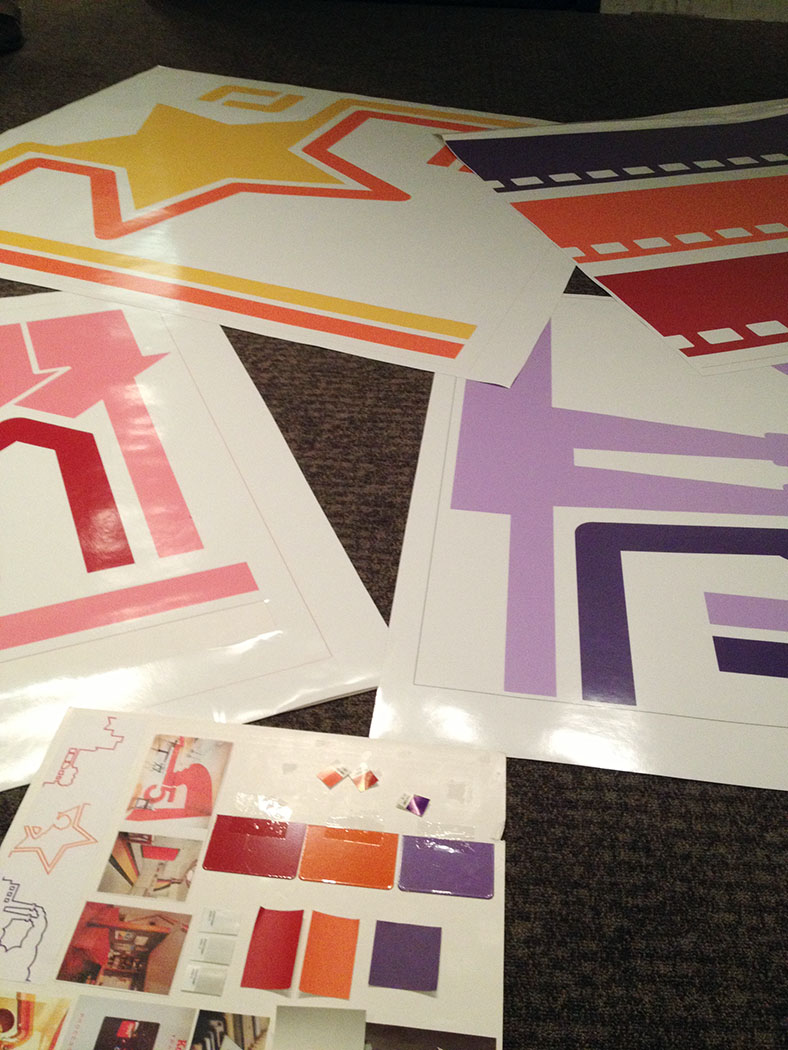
Documerica Supergraphics

Exhibit Designers in the O'Brien Gallery reviewing the super graphics for the 'Searching for the Seventies' exhibition.